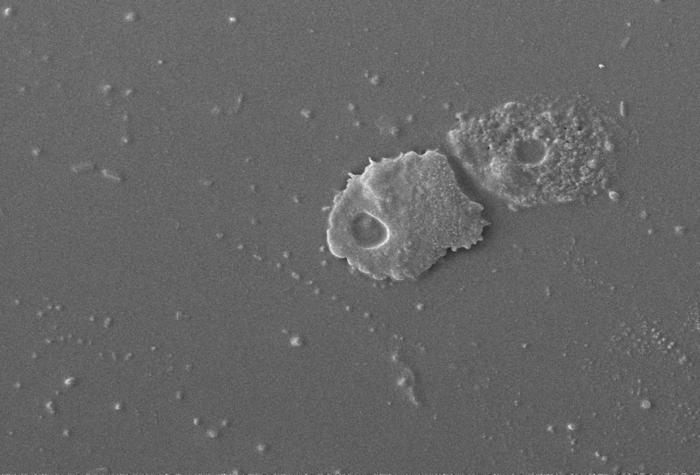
This scanning electron micrograph (SEM) revealed some of the ultrastructural features seen on the surface of an Acanthamoeba polyphaga protozoan. Note the amorphous nature of the organism's exterior from which pseudopodia, from the Latin pseudo = false, and podia = feet, can extend. These pseudopodia enable the amoeba to move about, and grasp objects in its environment.